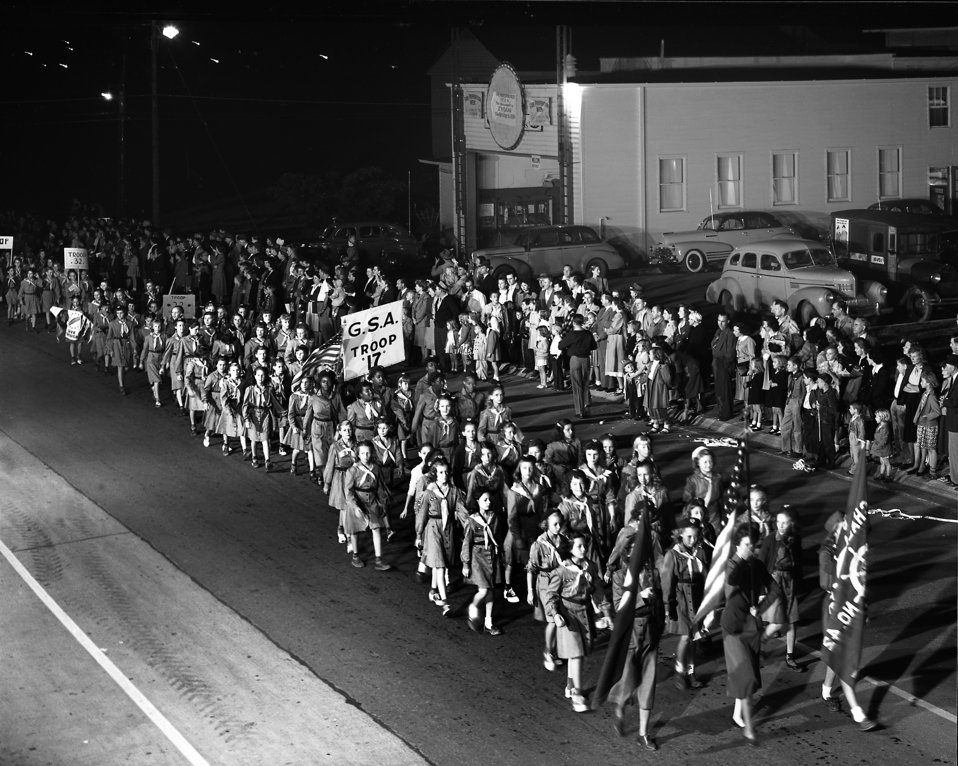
Parade Fire Prevention Week Oak Ridge 1948

5267-7f DOE photo Ed Westcott 10-9-1948 Oak Ridge Tennessee